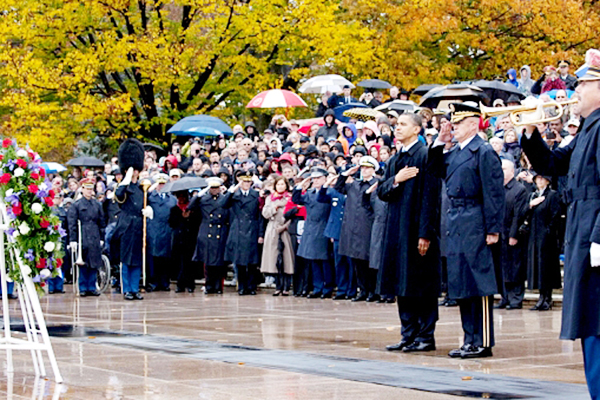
Obama's pledge: America will fulfill obligations to veterans

President Obama and Army Brig. Gen. Karl Horst pay their respects Nov. 11, 2009, at the Tomb of the Unknowns at Arlington National Cemetery in Virginia.